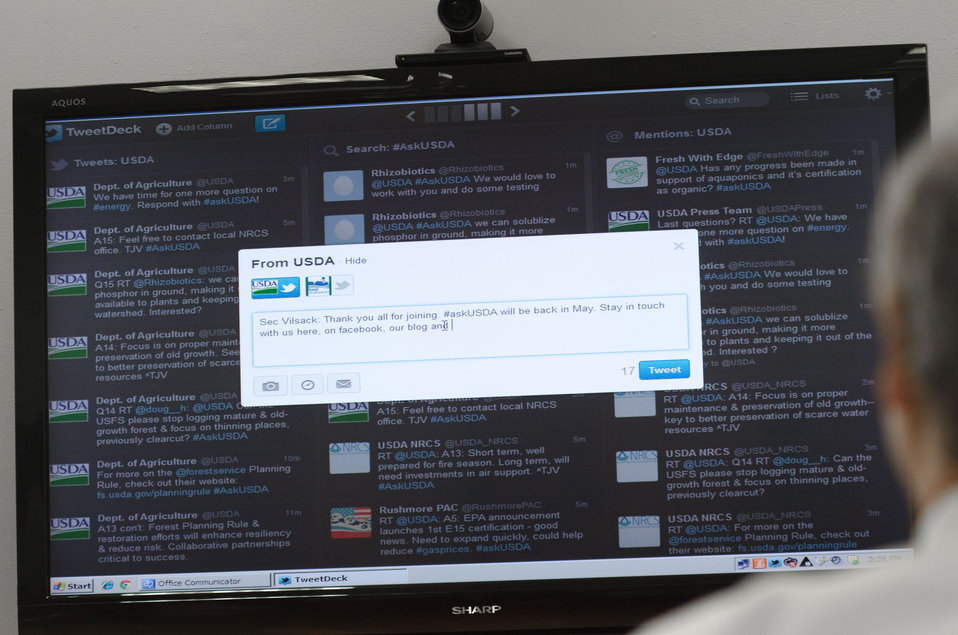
Agriculture Secretary Tom Vilsack tweets his closing message during a live 'Twitter' session held at the U.S. Department of Agriculture in Washington, D.C., on Thursday, April 4, 2012.